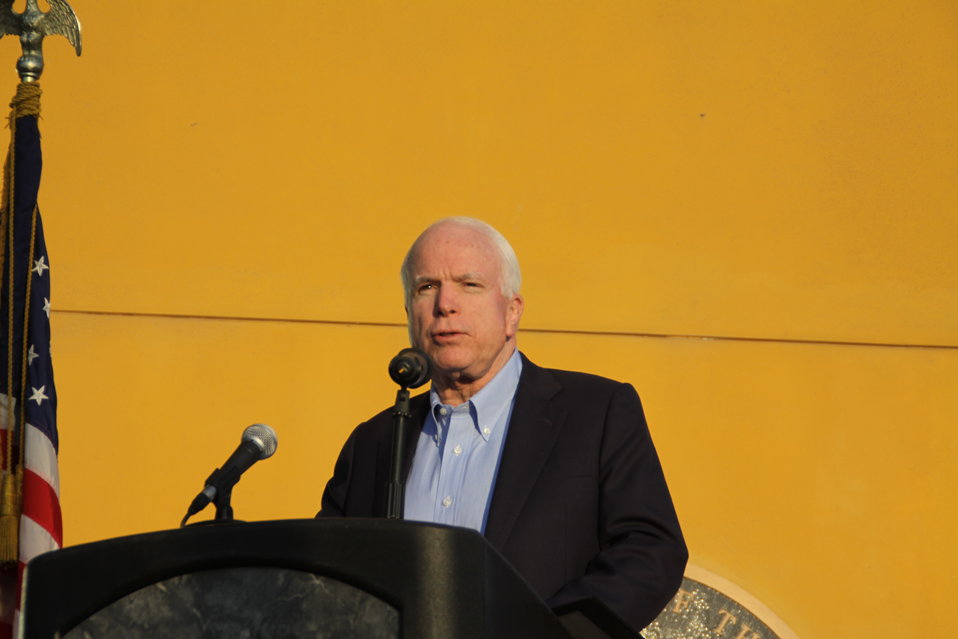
Senator McCain